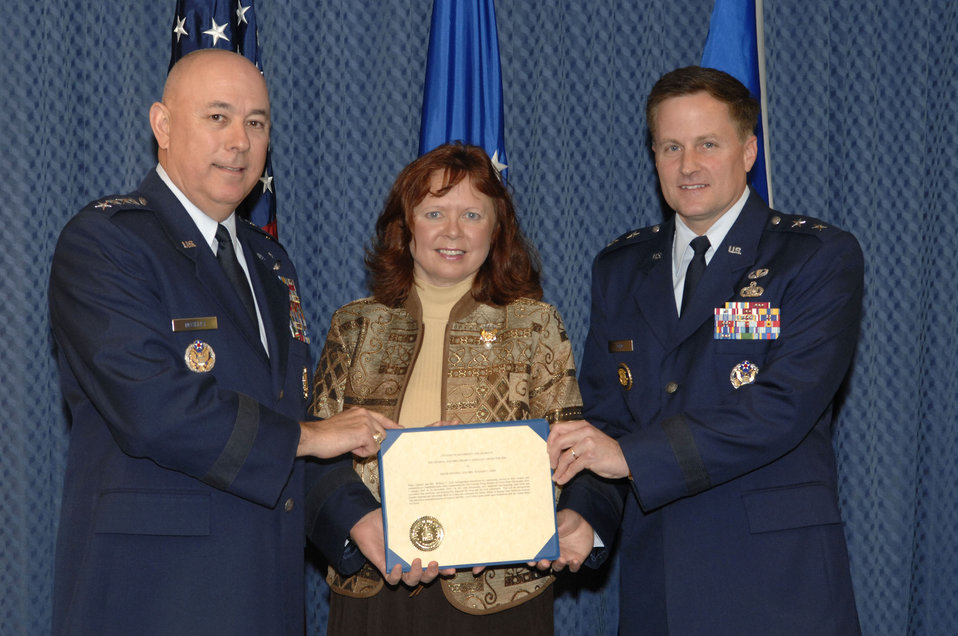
General, spouse receive O'Malley award

Maj. Gen. William T. Lord and his wife, Cynthia, receive the O'Malley Award from Air Force Chief of Staff Gen. T. Michael Moseley Nov. 15 at the Pentagon. The award is given to the wing commander and spouse who were the most involved in their community. General Lord was the base commander of Keesler Air Force Base, Miss., where he dealt with four hurricanes to include Katrina and Rita that devasted the Gulf Coast.